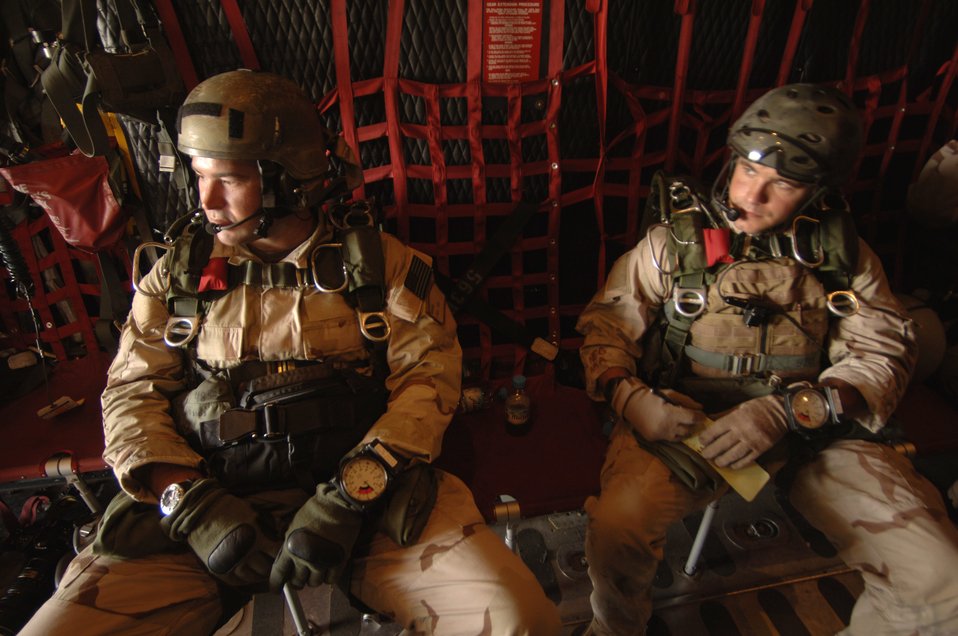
Pararescue jumpers train 'that others may live'

Senior Airmen Michael Brown and Jake Purvis wait for a visual signal from the jumpmaster to proceed to the rear cargo ramp of the HC-130 Hercules flown by 79th Expeditionary Rescue Squadron aircrew before a 9,900-foot free fall over Camp Lemonier, Djibouti. Assigned to the 48th Expeditionary Rescue Squadron under the Combined Joint Task Force Horn of Africa, the pararescue jumpers deployed from Davis-Monthan Air Force Base, Ariz., routinely jump to hone skills that qualify them for insertion into austere and hostile terrain.